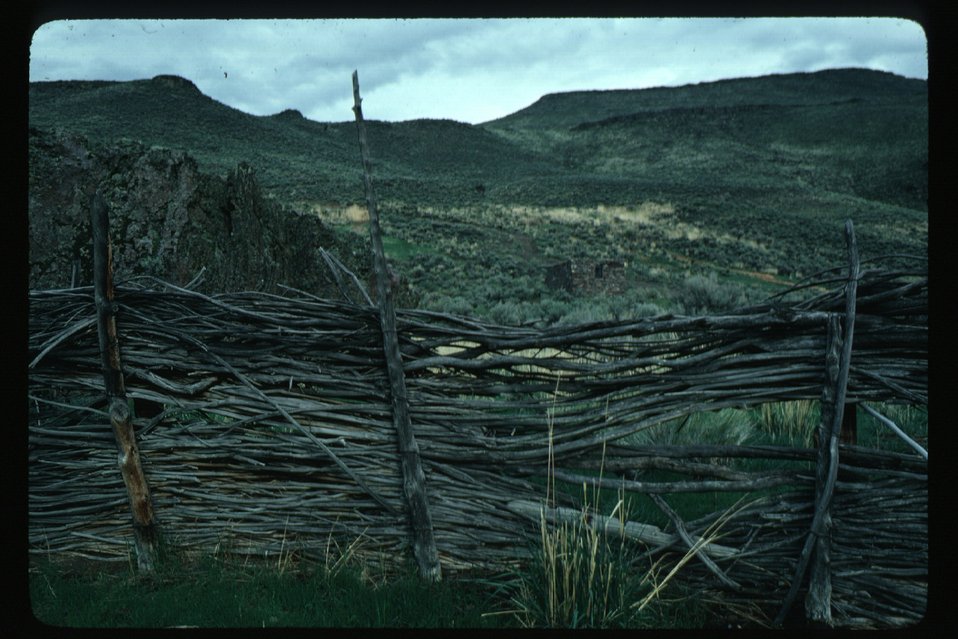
South Fork Owyhee Coyote Hole Archeology LSRD Lower Snake River District